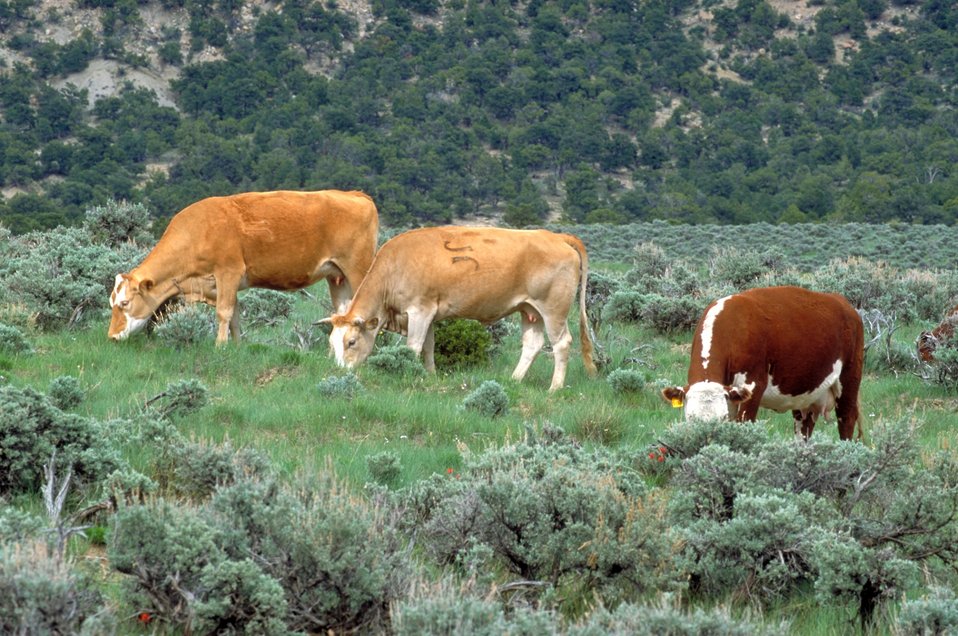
Livestock grazing on BLM lands near Price, Utah.